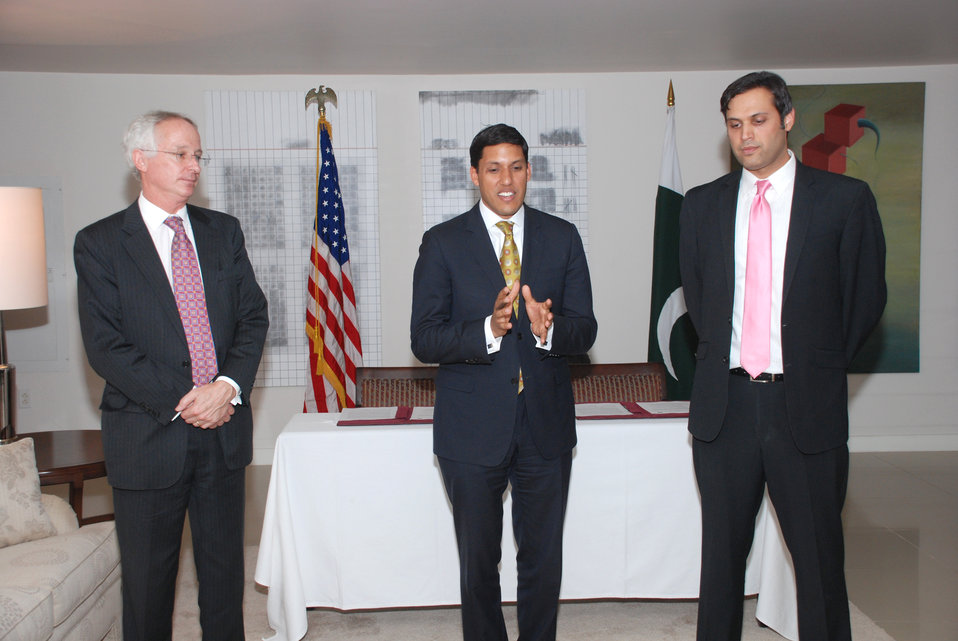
MoU Signing Ceremony between USAID and APF at Islamabad on April 18, 2012

Dr. Rajiv Shah Addressing the Officials